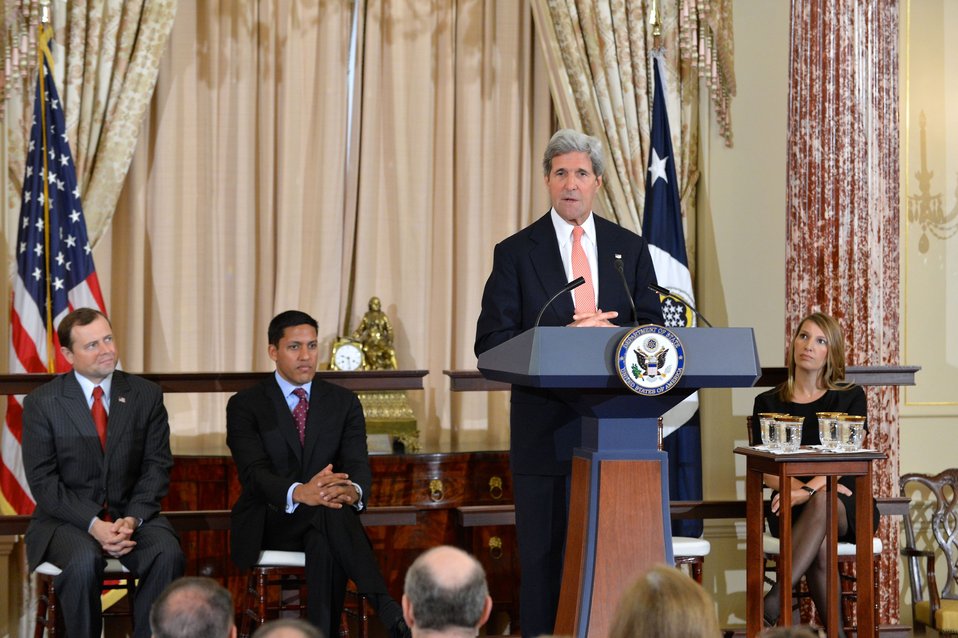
Secretary Kerry Delivers Remarks at the QDDR Launch

U.S. Secretary of State John Kerry delivers remarks at the public launch of the Department of State and U.S. Agency for International Development (USAID) review process for the second Quadrennial Diplomacy and Development Review (QDDR) at the U.S. Department of State in Washington, D.C., on April 22, 2014. The Secretary is joined by Deputy Secretary of State for Management and Resources Heather Higginbottom, USAID Administrator Rajiv Shah, and Special Representative for the QDDR Tom Perriello.